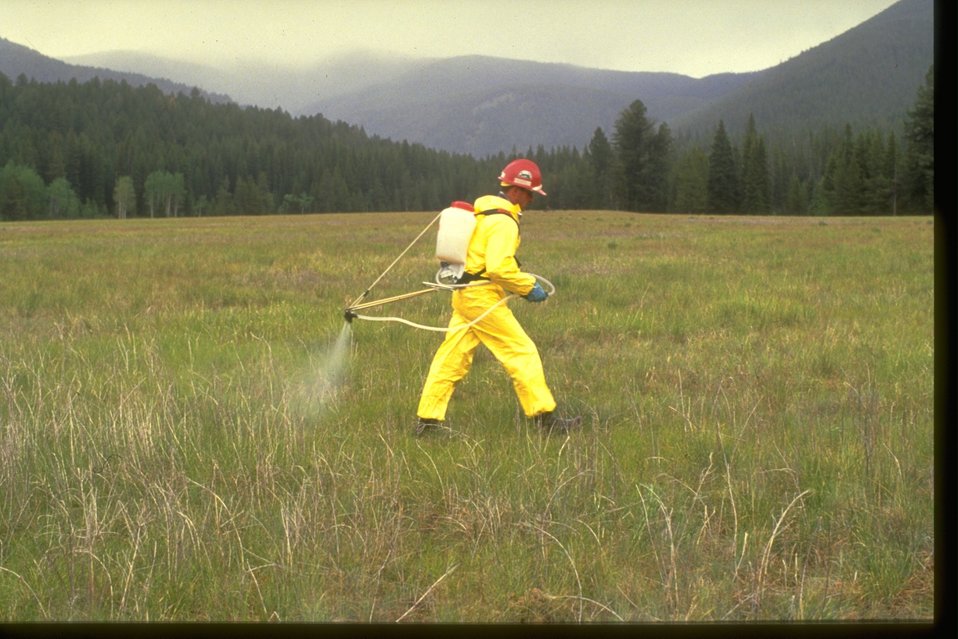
Forest Service application in the Bob Marshall Wilderness in Idaho.